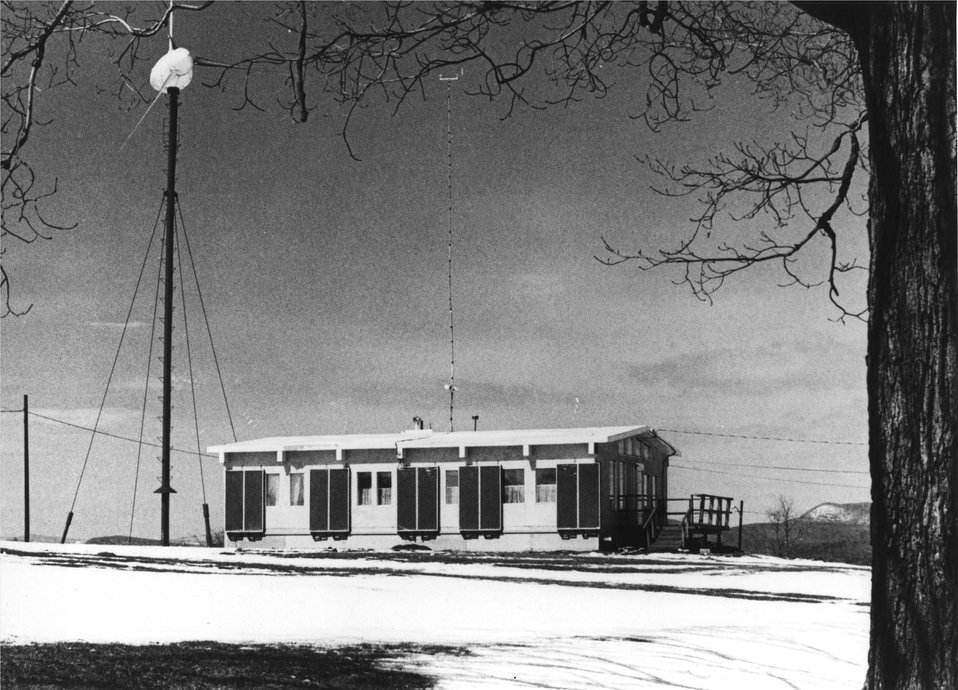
A three-bladed wind turbine and a solar heating system together provide about 80 percent of the heat needed by this experimental home at the University of Massachusetts, Amherst. c. 1977